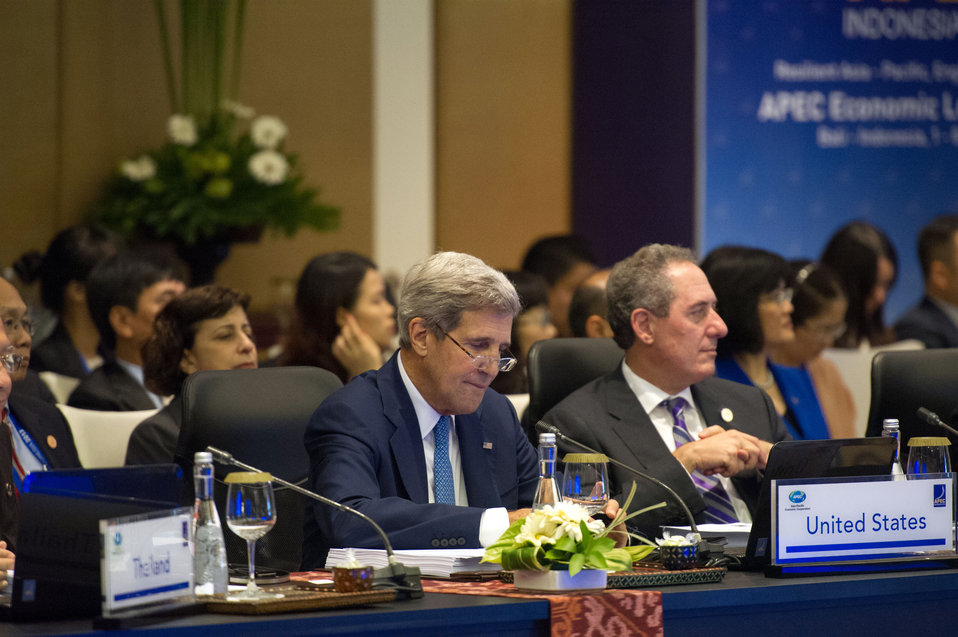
Secretary Kerry and U.S. Trade Represenative Froman Particpate in the Ministerial Meeting Opening Plenary Session

U.S. Secretary of State John Kerry and U.S. Trade Representative Michael Froman participate in the APEC Ministerial Meeting Opening Plenary Session in Bali, Indonesia, on October 4, 2013.